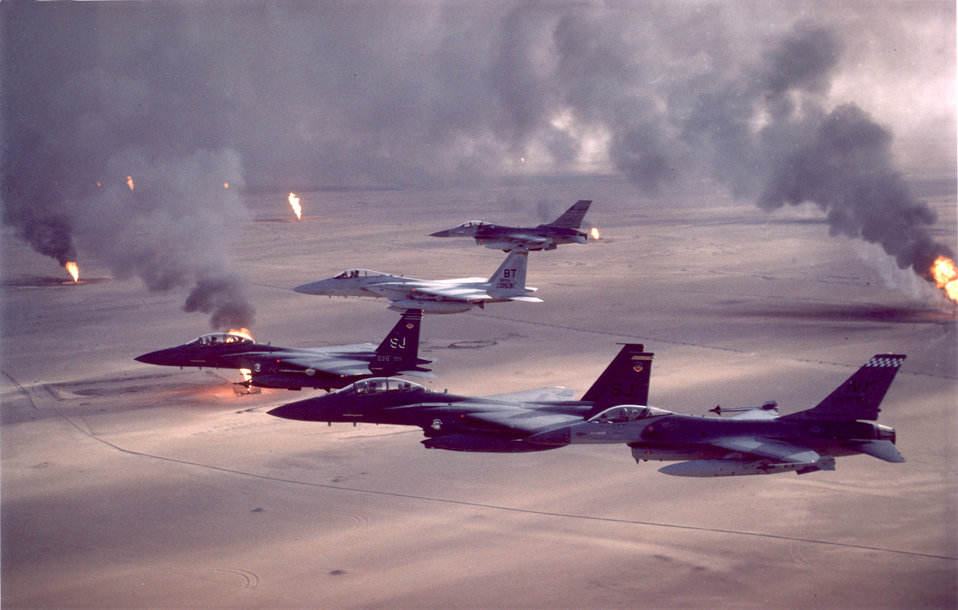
F-16A, F-15C and F-15E

1990's -- F-16A, F-15C and F-15E flying during Desert Storm.